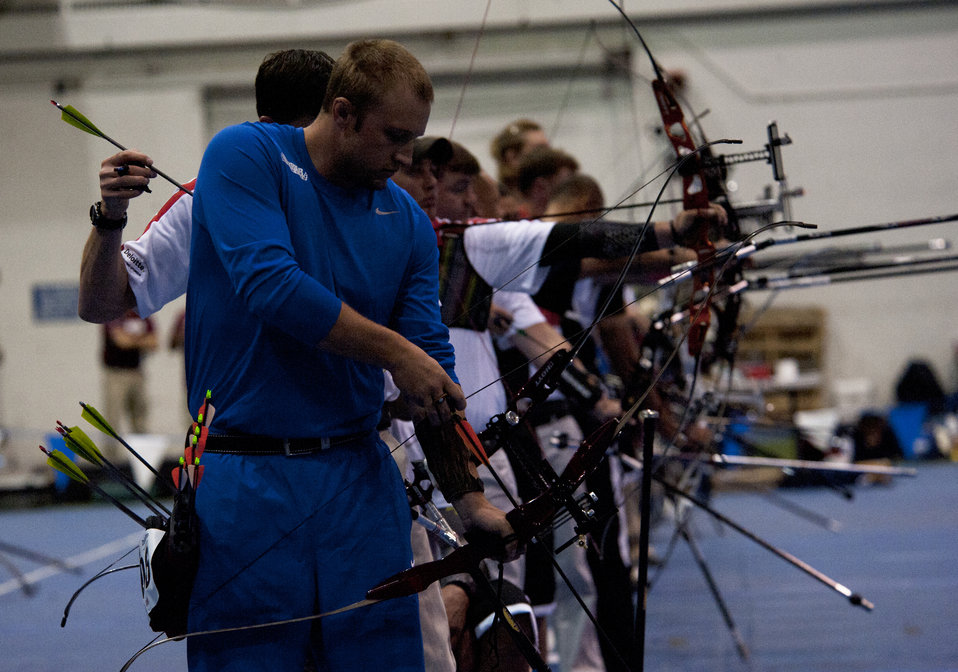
Warrior Games

Kendall Madden prepares to shoot his bow at his target during the archery competition of Warrior Games 2012 at the U.S. Air Force Academy in Colorado Springs, Colo., May 2, 2012. Madden is with the Air Force team.